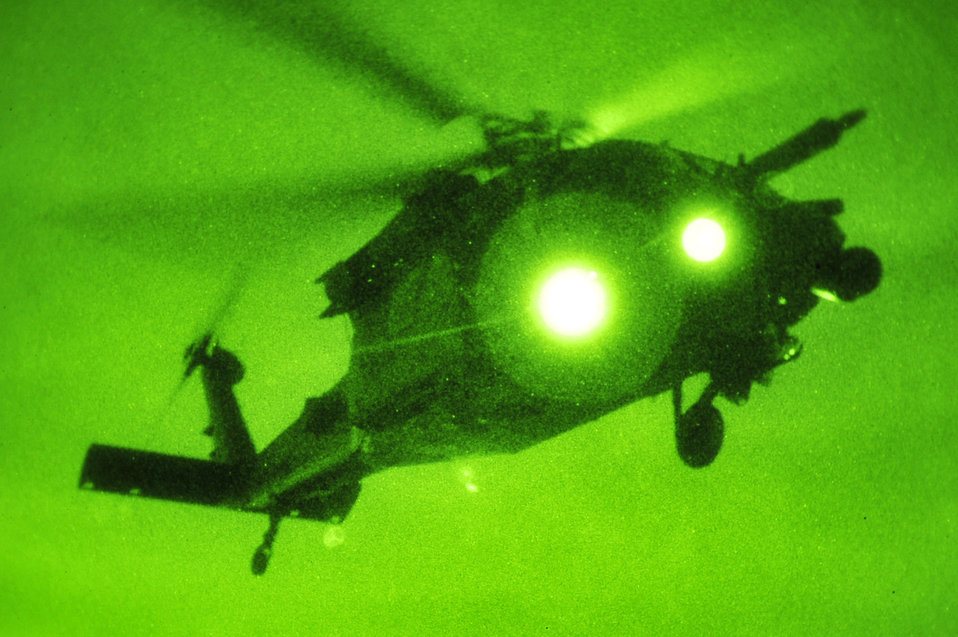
Survival and Evasion Training

A HH-60 Pave Hawk and crew